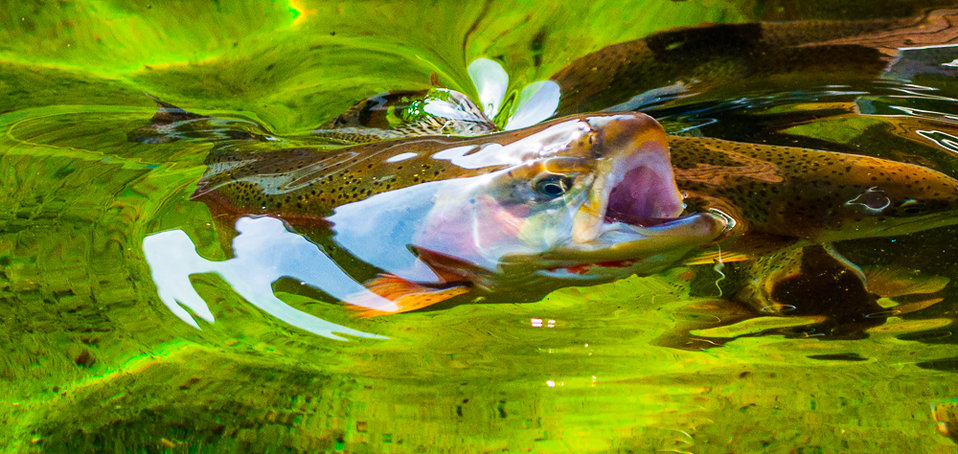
Rainbow Rise